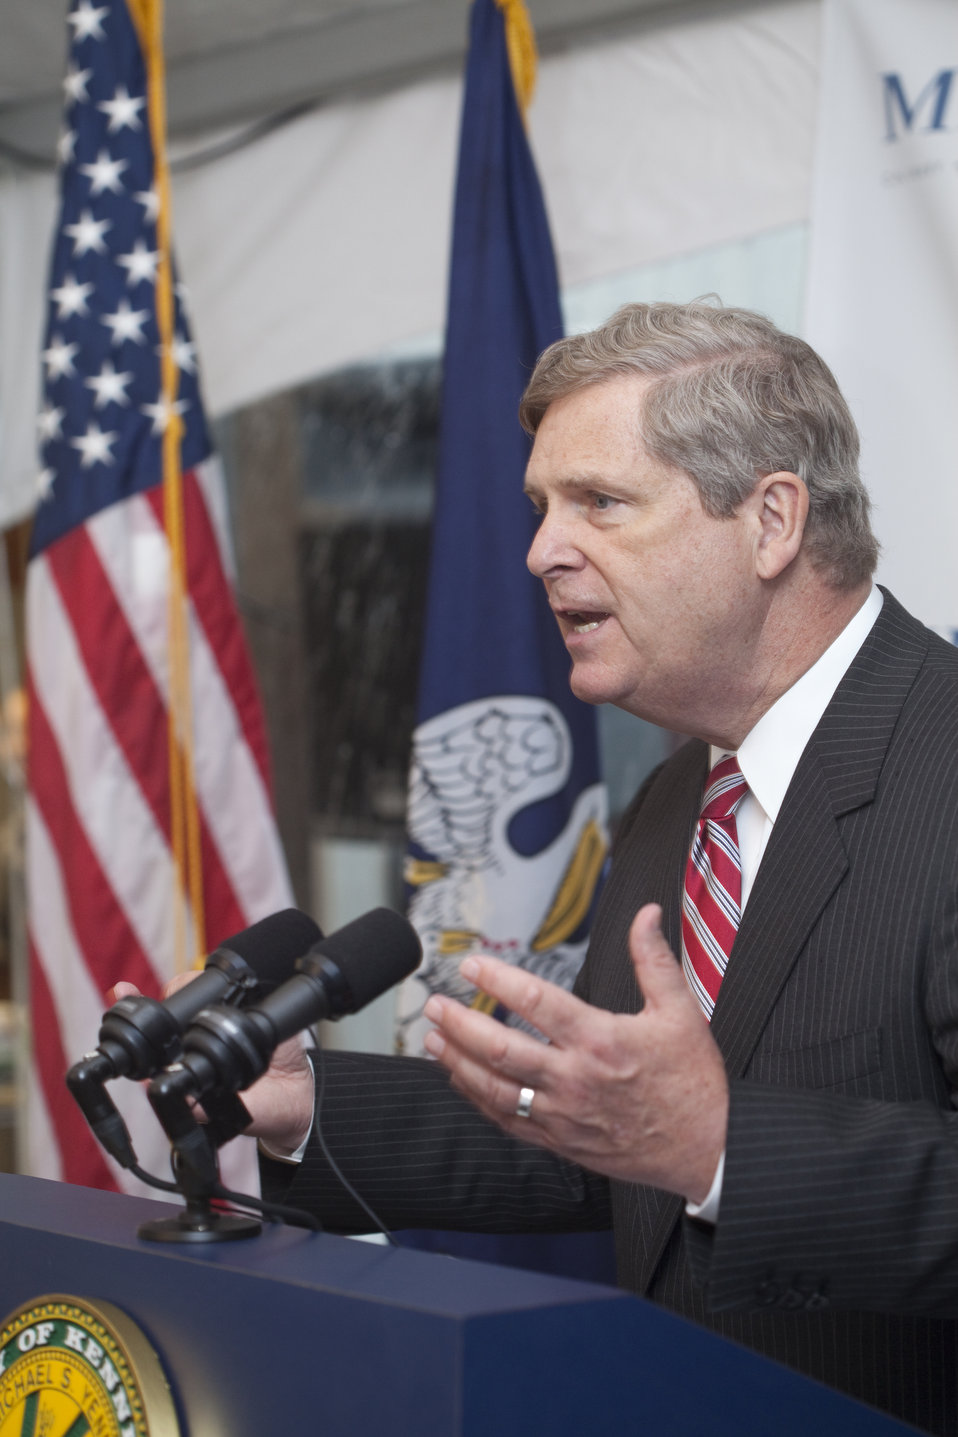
Agriculture Secretary Tom Vilsack speaks at the MMi Culinary Services in Kenner, LA on Wednesday, May 1, 2013. Secretary Vilsack stated that the U.S. Department of Agriculture (USDA) has made significant progress in improving the foods served to 32 million children each day through the National School Lunch Program. After the changes implemented by the Healthy, Hunger-free Kids Act of 2010, foods served in the lunch line include more fruits and vegetables, with less sugar, fat and sodium.